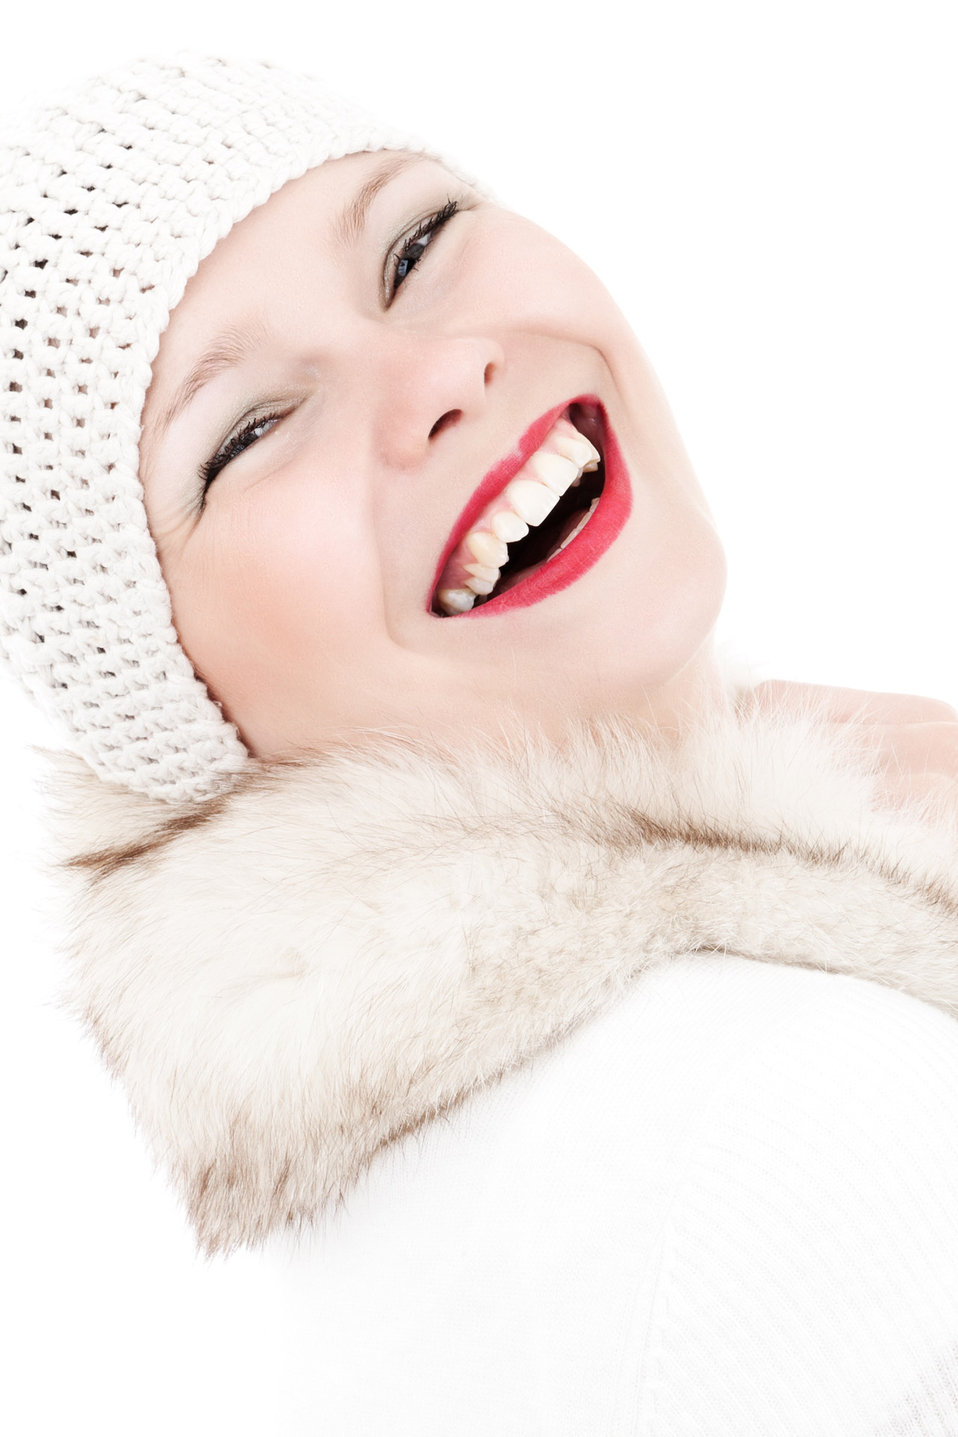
Smiling winter girl

Laughing winter girl.